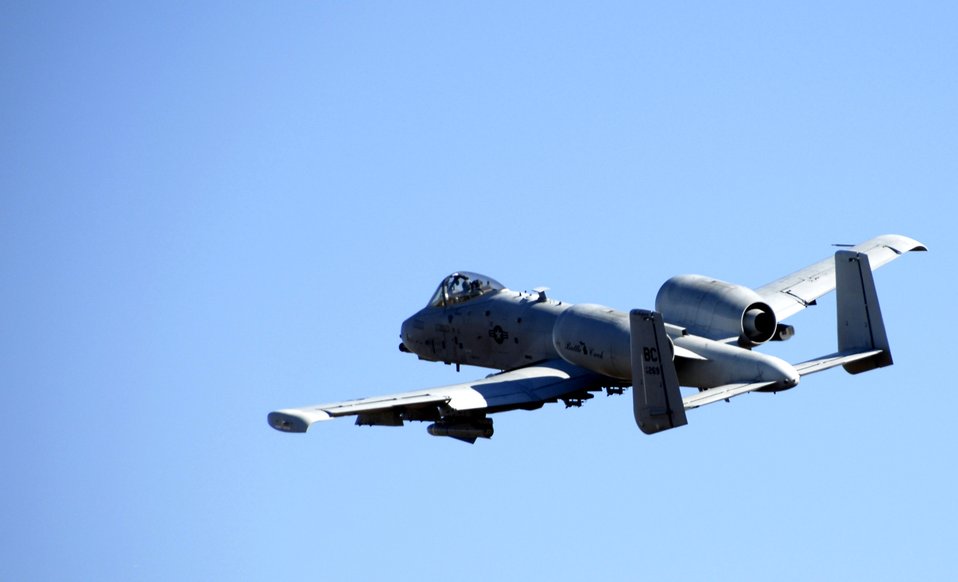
Hawgsmoke 2008

An A-10 Thunderbolt II from the Michigan Air National Guard's 110th Fighter Wing based in Battle Creek, turns to engage a target Oct. 16 at the Smoky Hill Range near Salina, Kan. Fourteen A-10 squadrons from across the Air Force are competing in Hawgsmoke 2008 Oct. 14 to 18. Hawgsmoke is a biennial A-10 bombing and aerial gunnery competition, which was hosted this year by the Air Force Reserve Command's 442nd Fighter Wing based at Whiteman Air Force Base, Mo.